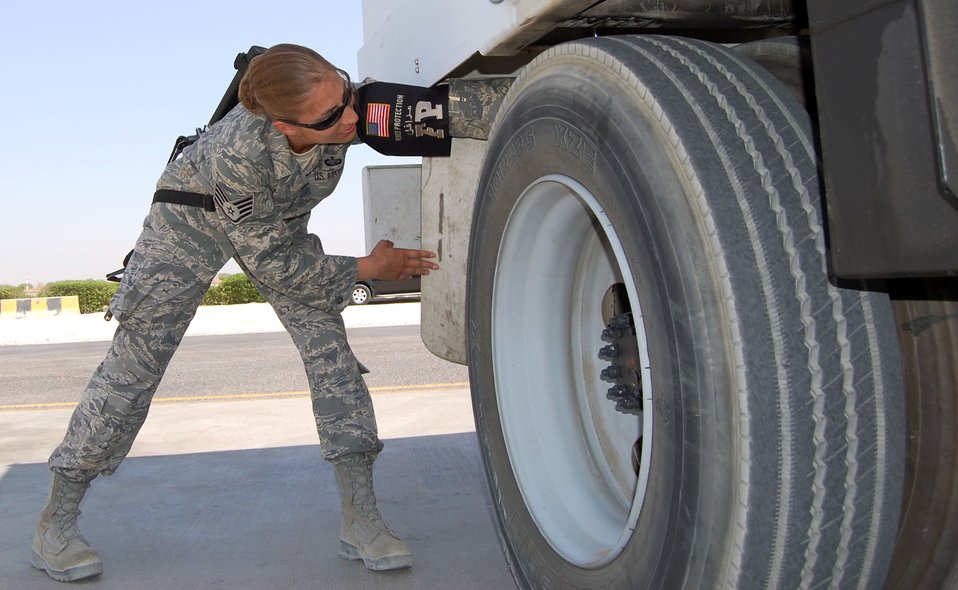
Force protection specialist keep movment safe, seamless

Staff Sgt. Amanda Sutton searches behind a wheel of air conditioning truck Sept. 25 at an undisclosed location in Southwest Asia. Sergeant Sutton is a 387th Expeditionary Support Squadron force protection specialist from Brooks City Base, Texas.